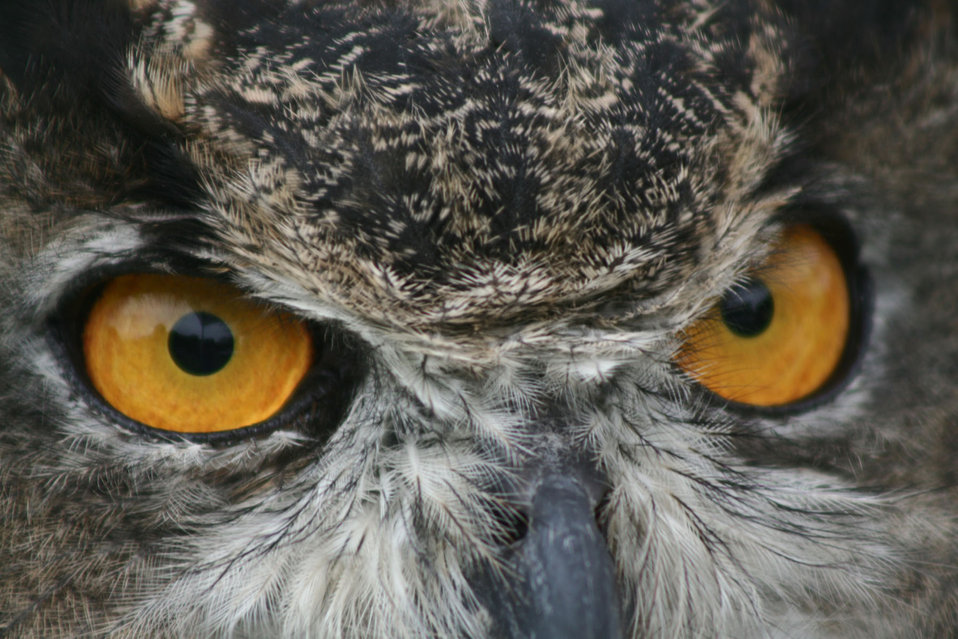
great horned owl

John Heinz National Wildlife Refuge, PA